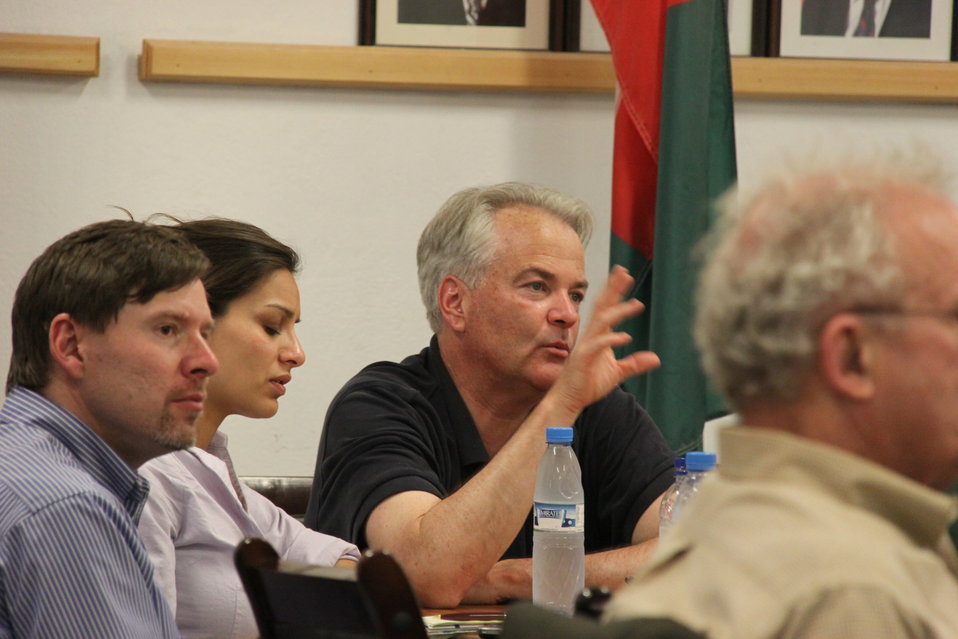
Meeting with Local Leaders in Kandahar